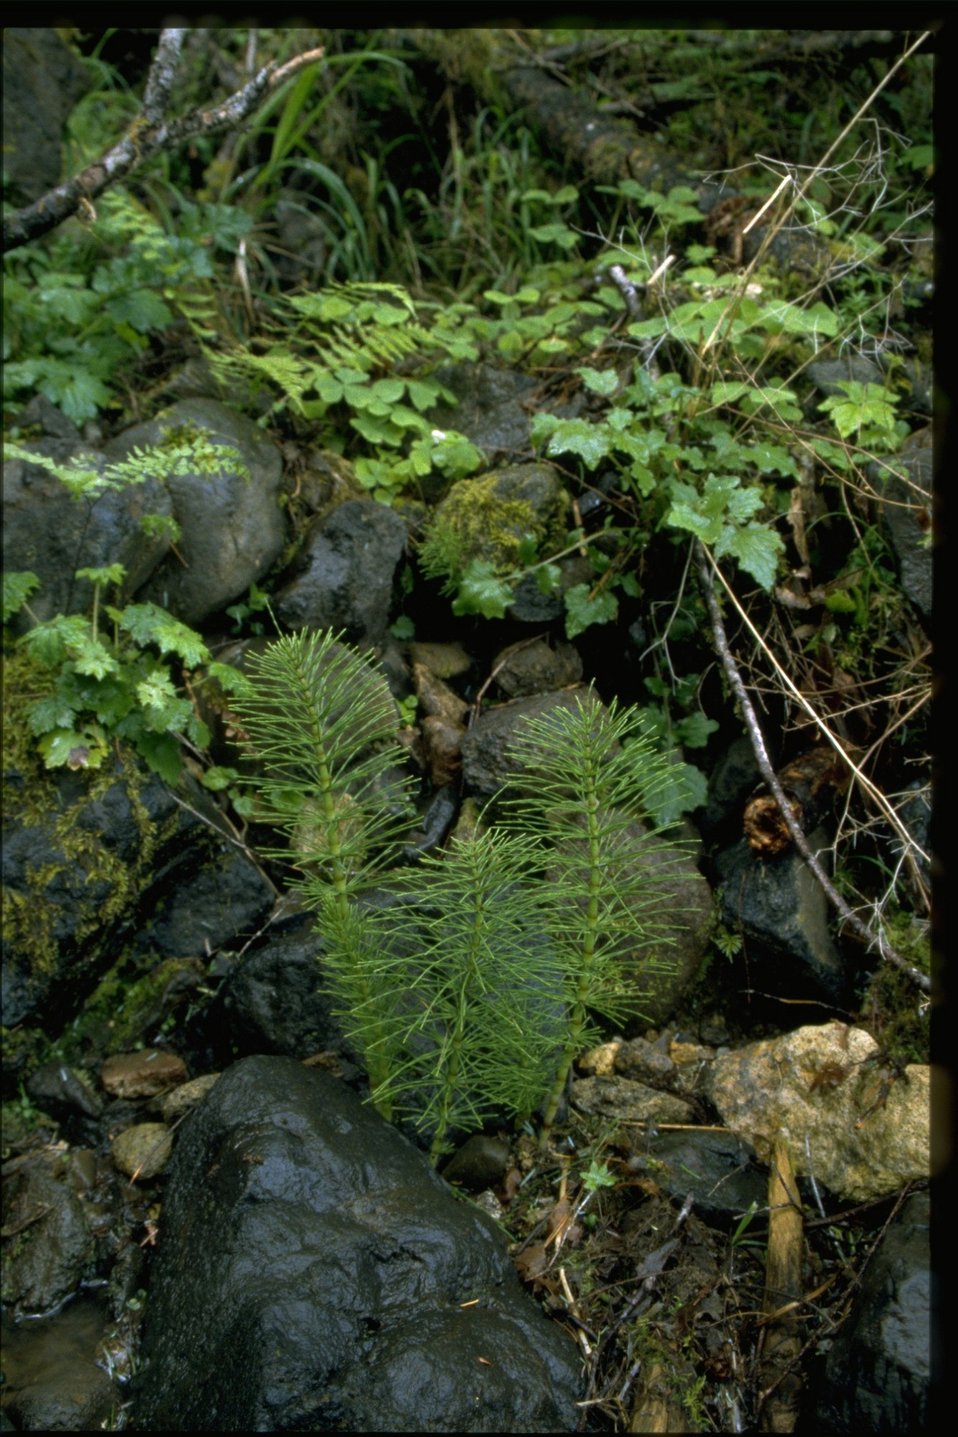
Equisetum arvense.